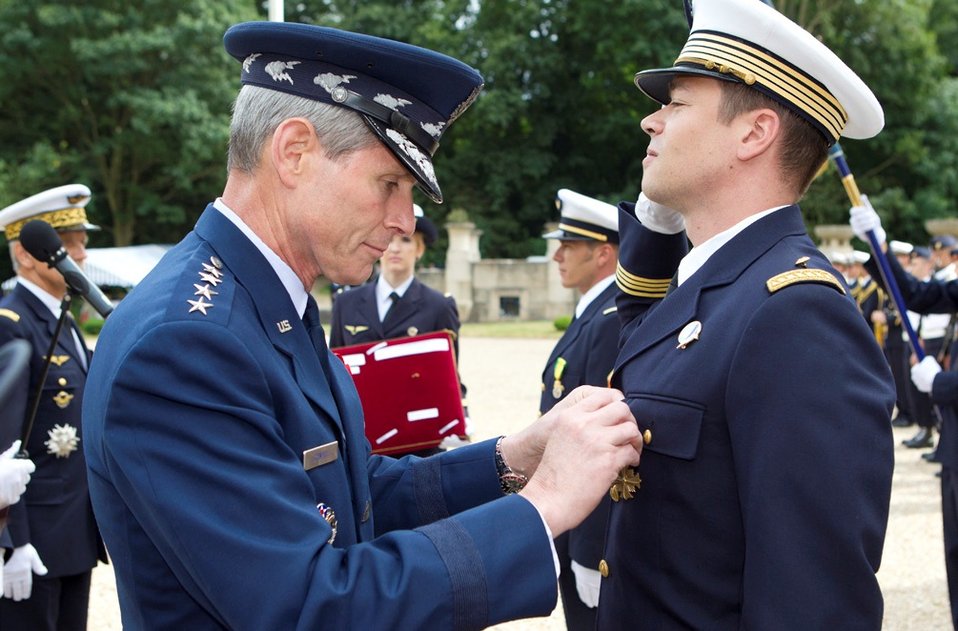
Honoring a hero

Air Force Chief of Staff Gen. Norton Schwartz pins the Distinguished Flying Cross with Valor on the uniform of French air force Maj. Guillaume Vernet July 13, 2011, at the Lafayette Escadrille Memorial in Marnes-la-Coquette, France. Vernet was awarded the decoration for repeatedly flying into hostile territory in December 2009 while deployed to Afghanistan as an exchange officer with the 41st Rescue Squadron from Moody Air Force Base, Ga. During that mission, Vernet rescued an urgent casualty whose injury put the lives of 160 British soldiers in jeopardy.